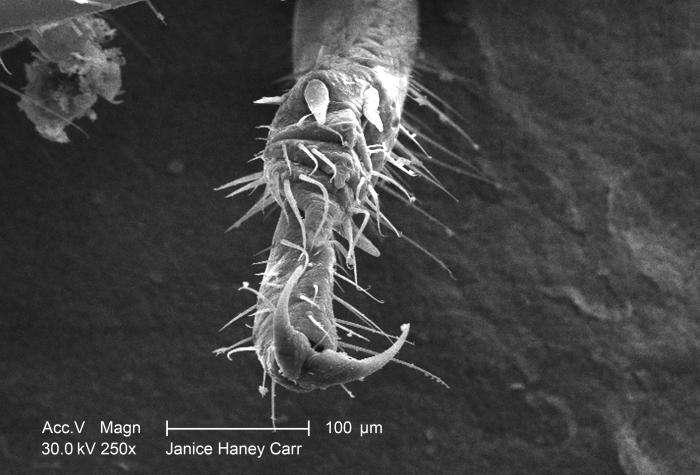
Under a relatively-low magnification of 250X, this scanning electron micrograph (SEM) revealed some of the ultrastructural morphology found at the distal end of one of the six jointed legs of a termite, which had been discovered in the suburbs of Atlanta, Georgia.